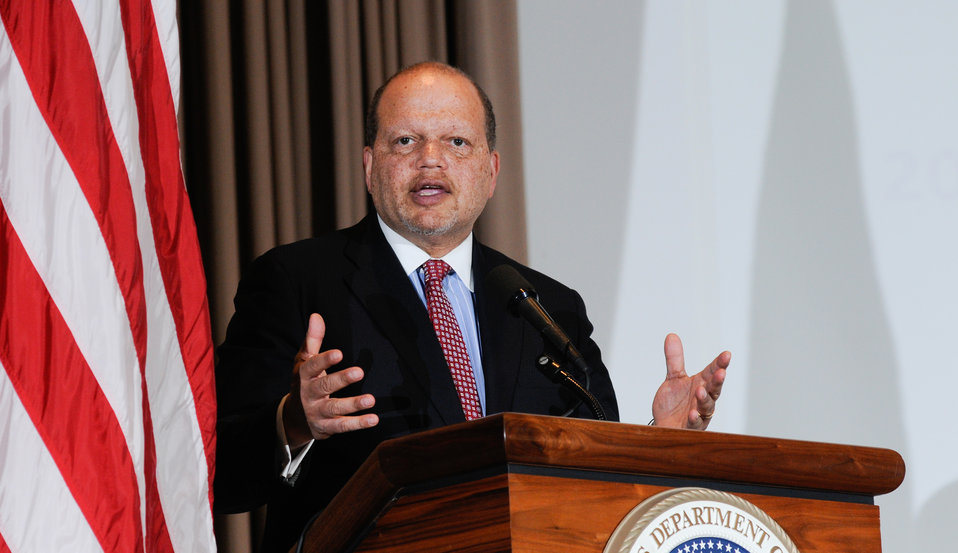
Professor of Law, Columbia University of Law Theodore Shaw speaks at the U.S. Department of Agriculture (USDA) Dr. Martin Luther King, Jr. National Service Day presentation of the Drum Major for Service Awards at the USDA Jefferson Auditorium in Washington, D.C., on Tuesday, Jan. 15, 2013.